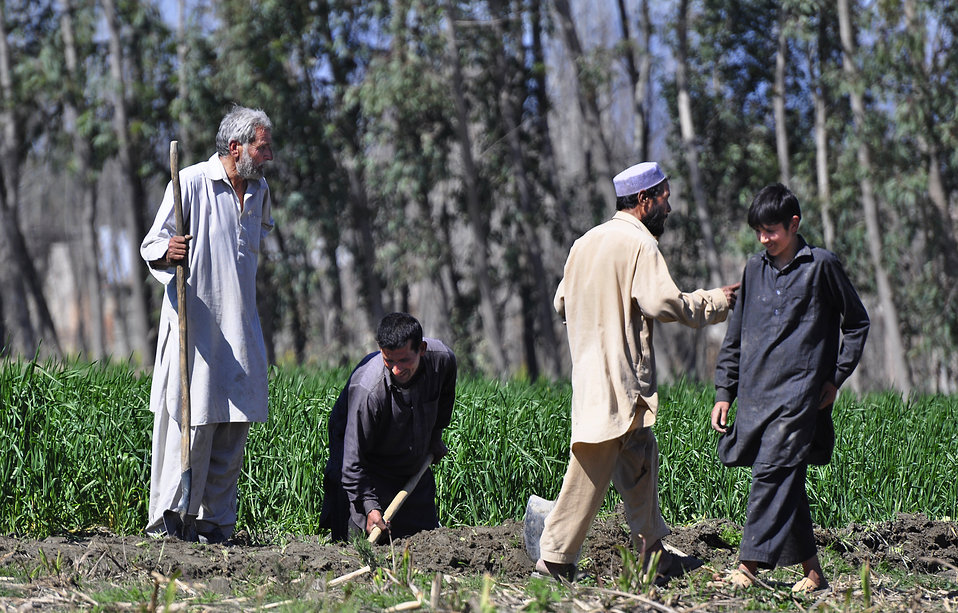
2011 March: USAID's Agricultural Recovery Program in 22 districts of Khyber Pakhtunkhwa, Punjab and Balochistan is an excellent example of the impact US development assistance can have. We have helped more than 500,000 farmers salvage the winter planting season and livestock after the floods. As a result, wheat farmers have nearly doubled their harvests. More than 5 million people have benefited. These photos show progress of the USAID Agricultural Recovery Project in Khyber Pakhtunkhwa.